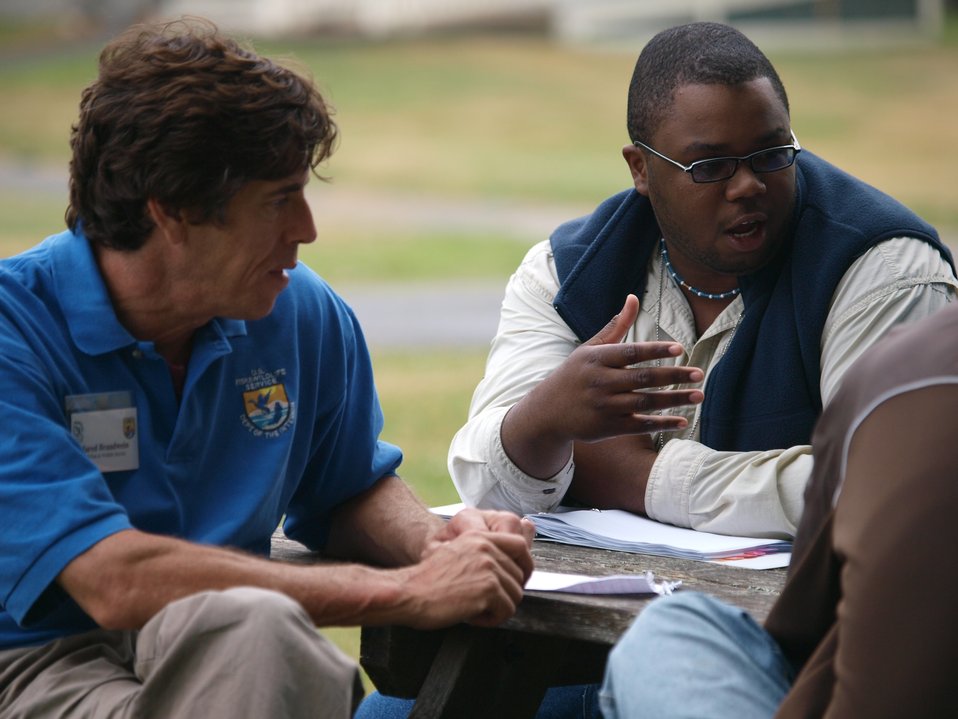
Debating conservation ethics

Refuge manager Jared Brandwein (Left) and CIP Intern Anthony Adams participate in a debate about conservation.